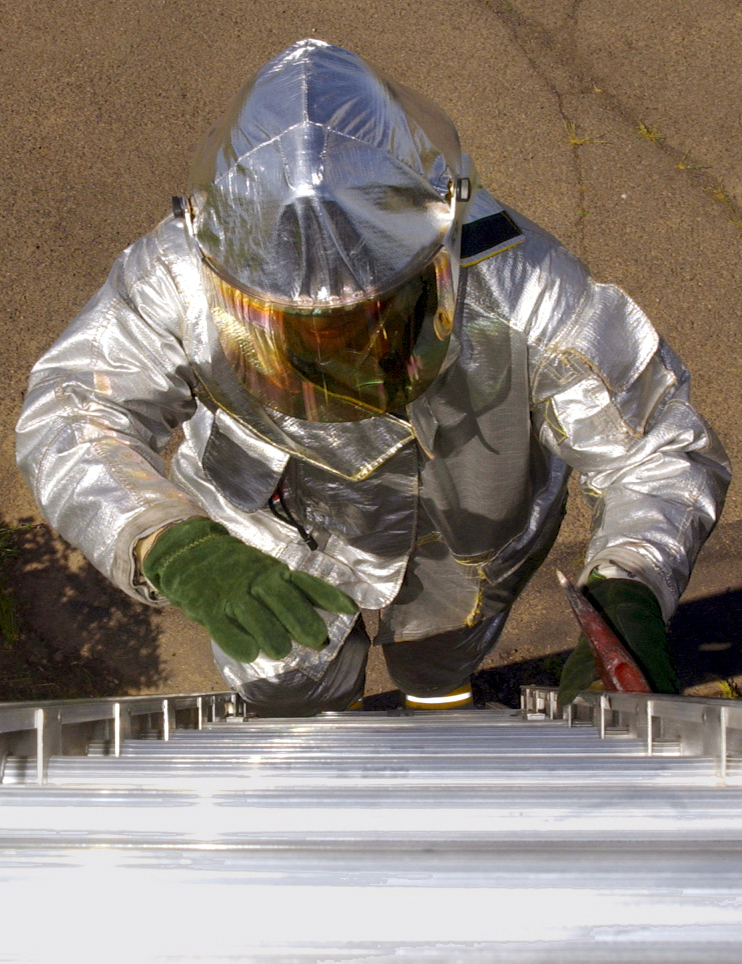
Help is coming

FAIRCHILD AIR FORCE BASE, Wash. -- Airman 1st Class Ross Anderson, a 92nd Civil Engineer Squadron firefighter, climbs up a 35 foot ladder onto a roof for vertcal ventilation, during structrual fire training on here, May 29, 2003. The 92nd CES fire department personnel train for emergency medical services, structural fires, motor vehicle extraction, hazardous material operations, wild land fires, and aircraft accidents.